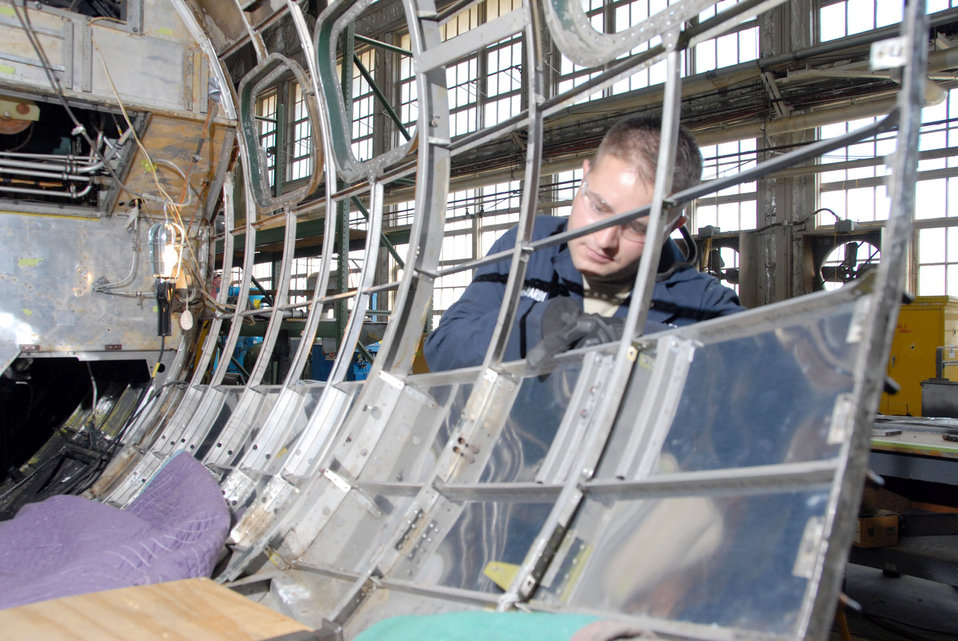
Museum restoration

A reservist with the 315th Maintenance Squadron from Charleston Air Force Base, S.C., replaces sheet metal on the B-17 nicknamed